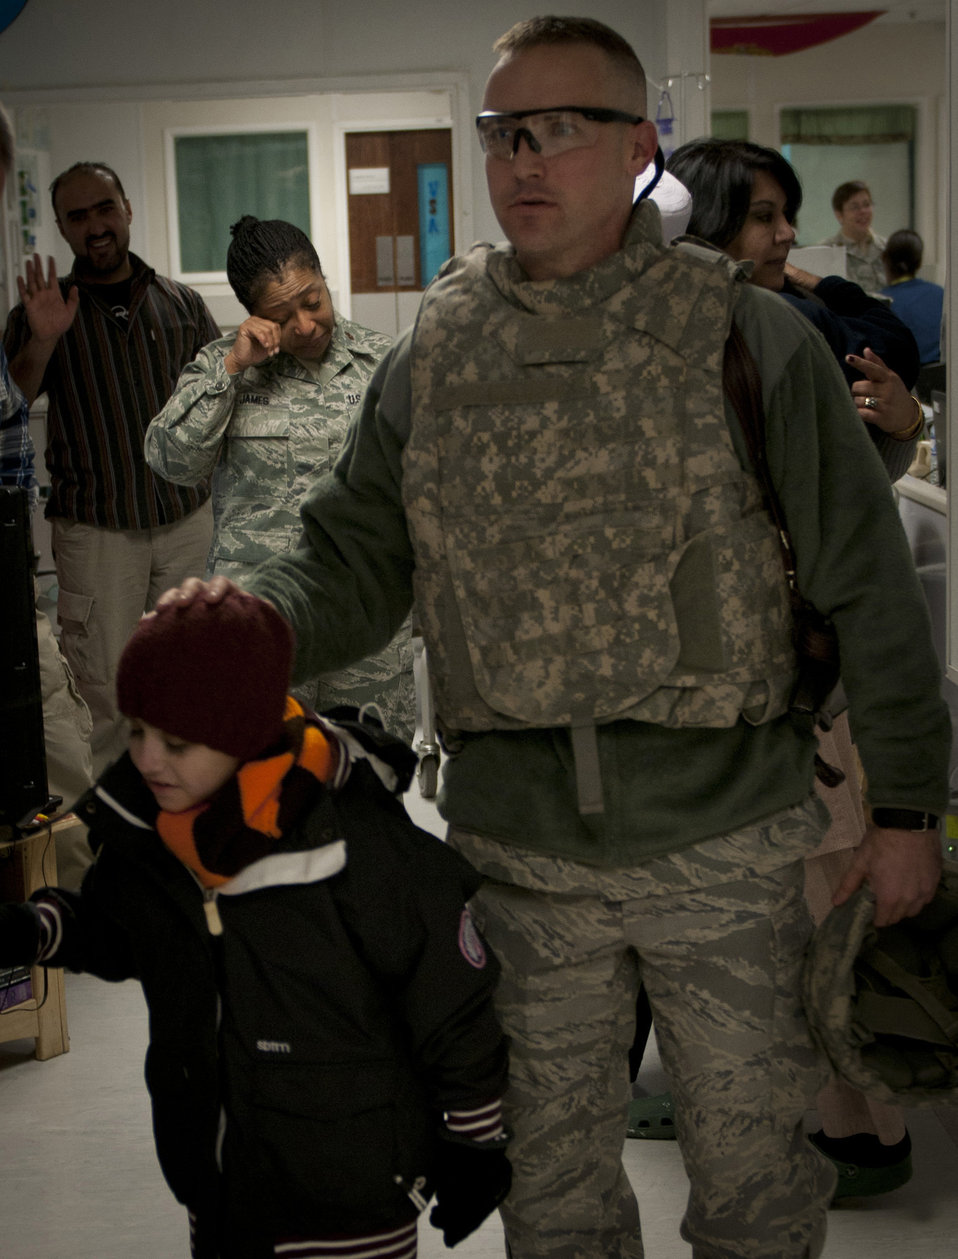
Craig Joint-Theater Hospital's longest resident inspires staff

Maj. Sherrol James cries in the background as Maj. (Dr.) Joe DuBose escorts Najibullah out of the Craig Joint-Theater Hospital on Jan. 9, 2012, after being in its care for more than six months. Najibullah was severely injured in the stomach July 20, 2011, in Ghazni province and had been under the care of the hospital since. James is a chaplain at the Craig Joint-Theater Hospital, and DuBose is the trauma chief at the Craig Joint-Theater Hospital.